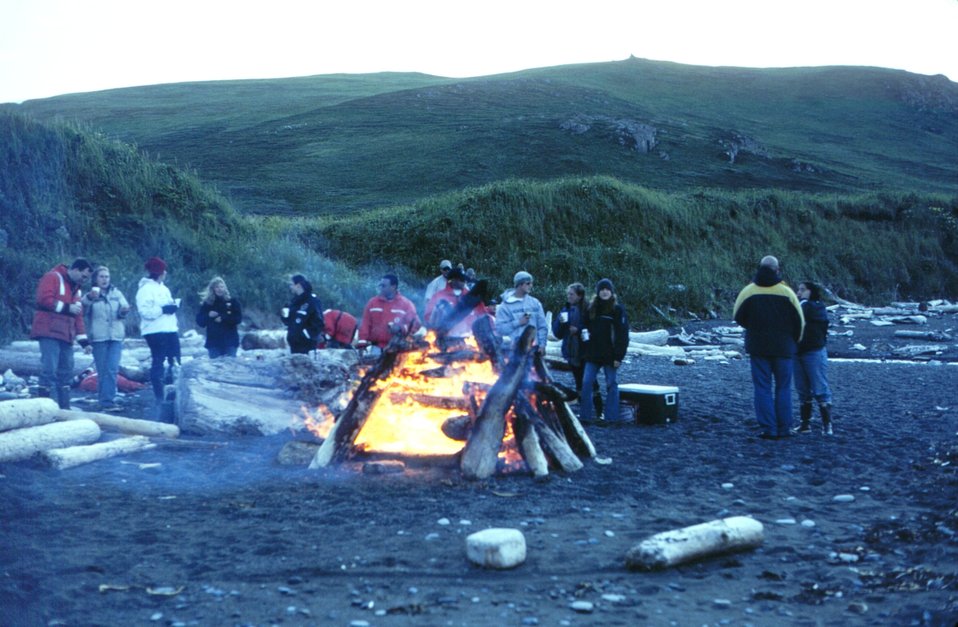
NOAA Ship RAINIER crew beach party at Chowiet Island in the Semidi Island group southwest of Kodiak Island.